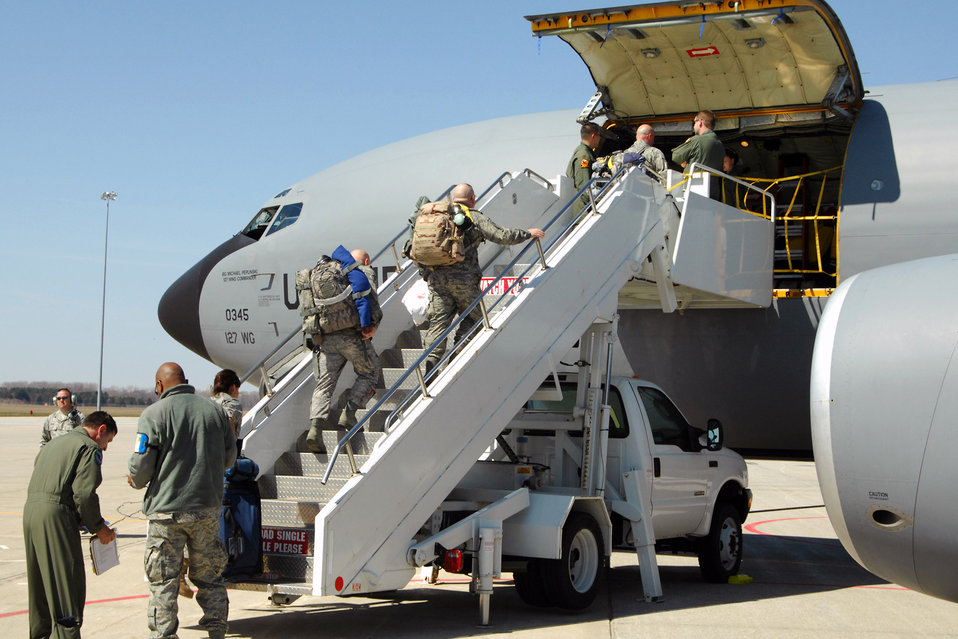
Airmen prepare KC-135

Members of the Michigan Air National Guard's 127th Air Refueling Group board a KC-135 Stratotanker April 14, 2011, at Selfridge Air National Guard Base, Mich.